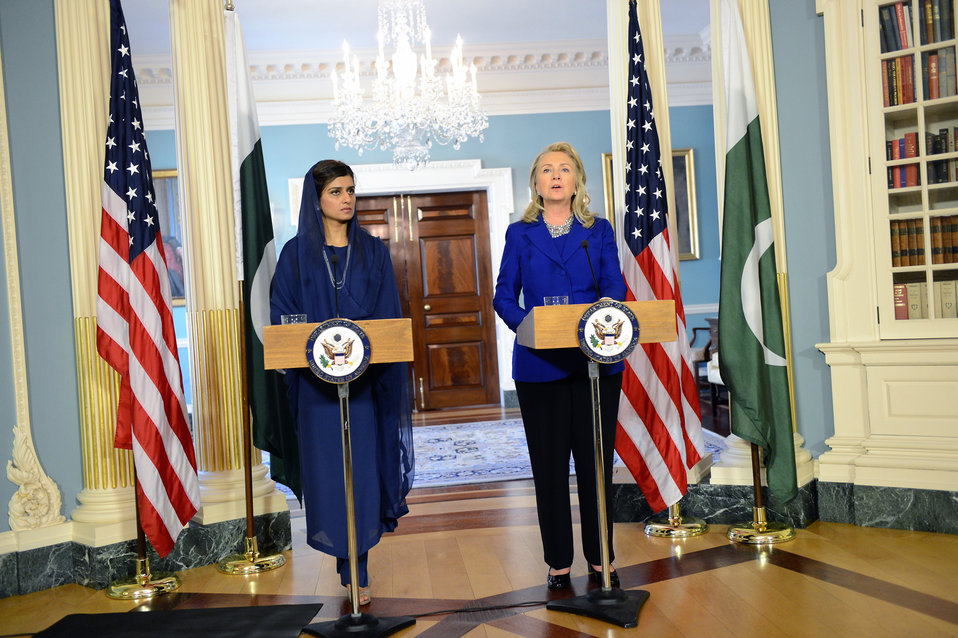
Secretary Clinton Meets With Pakistani Foreign Minister Khar

U.S. Secretary of State Hillary Rodham Clinton meets with Pakistani Foreign Minister Hina Rabbani Khar at the U.S. Department of State in Washington, D.C., September 21, 2012.